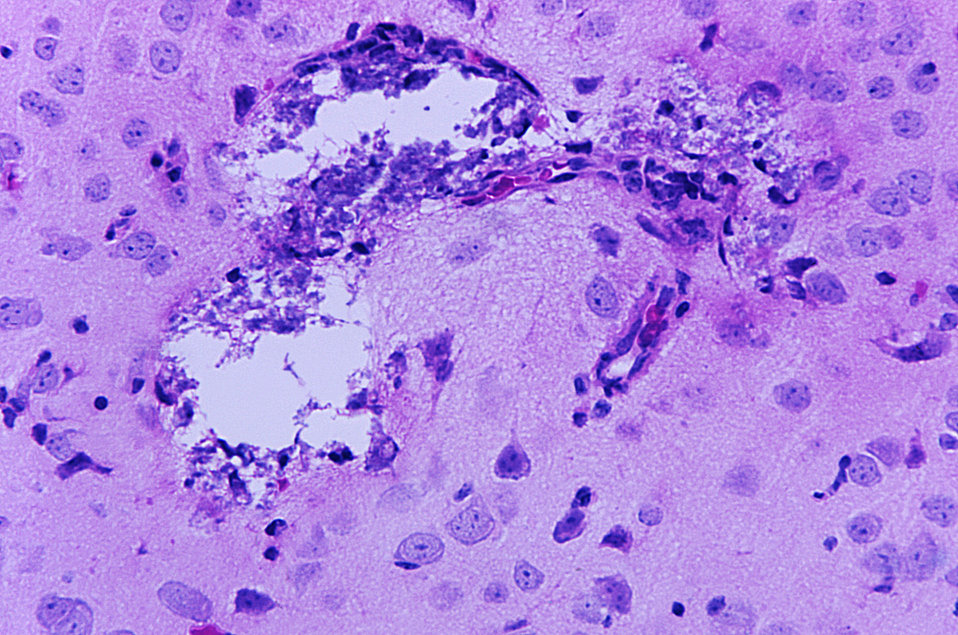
This micrograph reveals the histopathologic changes found in Tamiami virus encephalitis; Mag. 300X.